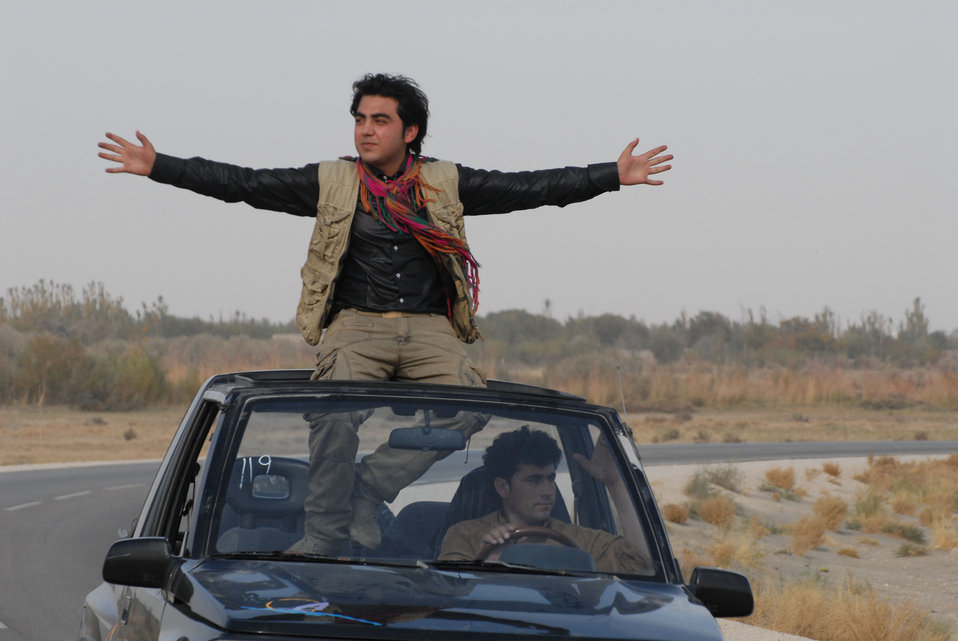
'On the Road' in Balkh Province